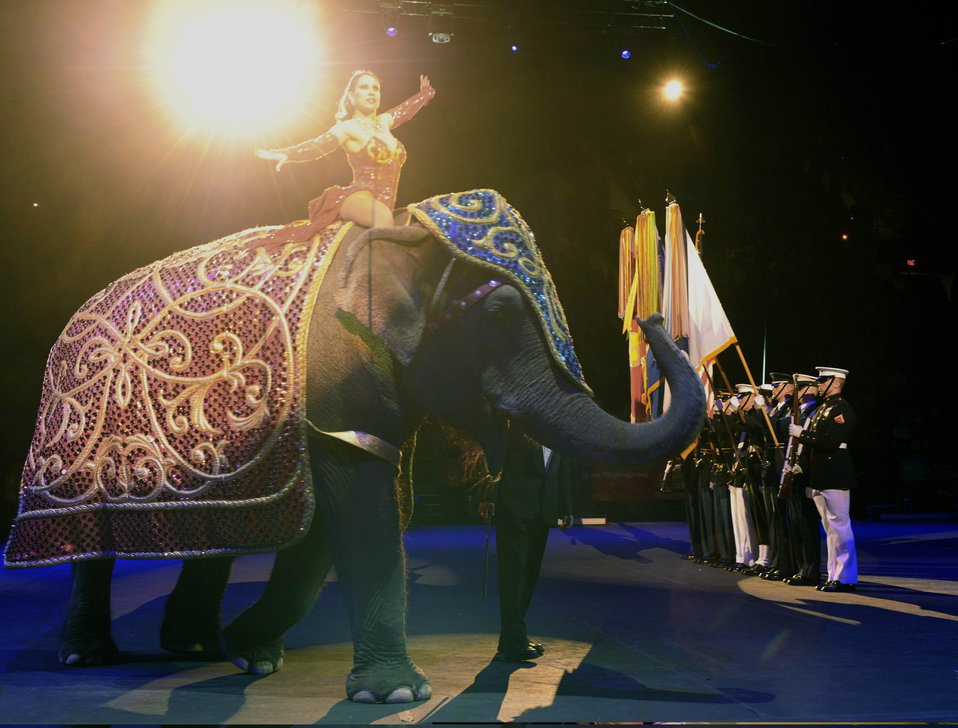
YOAFF & Circus

The Military District of Washington's Joint Color Guard present the flags as a two ton Asian elephant helps open the Ringling Bros. and Barnum & Bailey